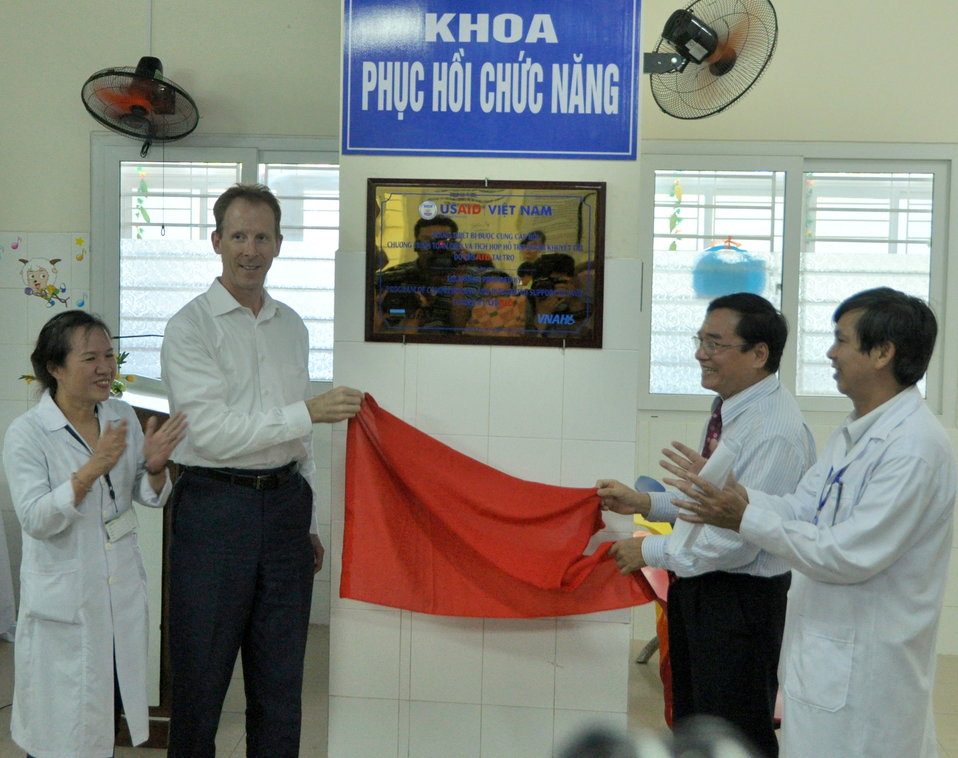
USAID Mission Director Joakim Parker and USAID Partners Join to Open Rehabilitation Department at Women's and Children's Hospital of Danang

July 16, 2013